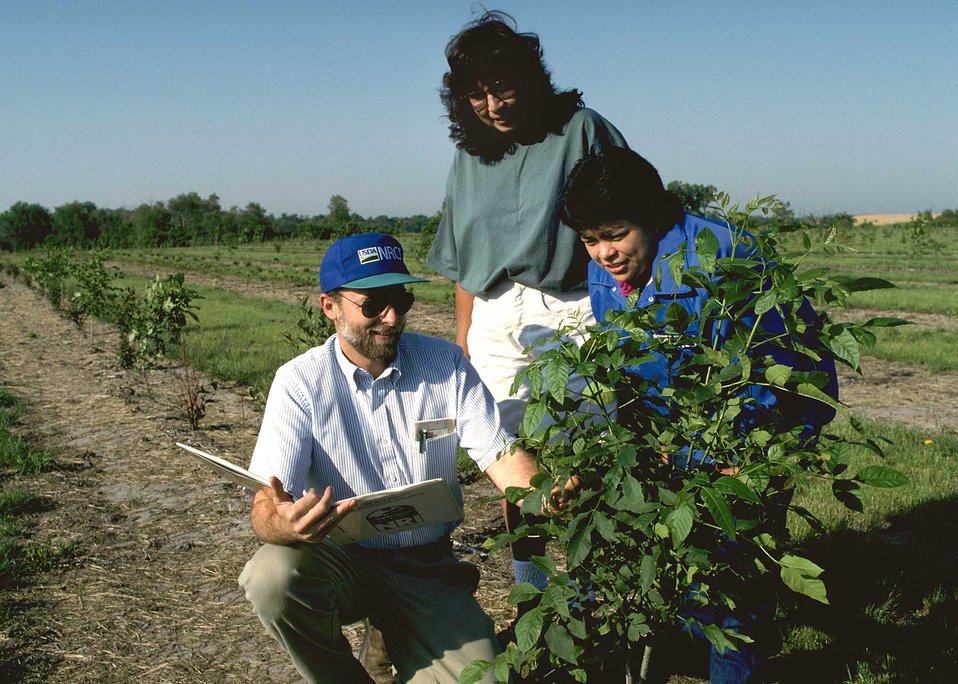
Landowner; Connie Ramirez, NRCS District Conservationist; and Doug Johnson, NRCS District Conservationist, take a look at trees on landowners farm near Muscatine, IA.